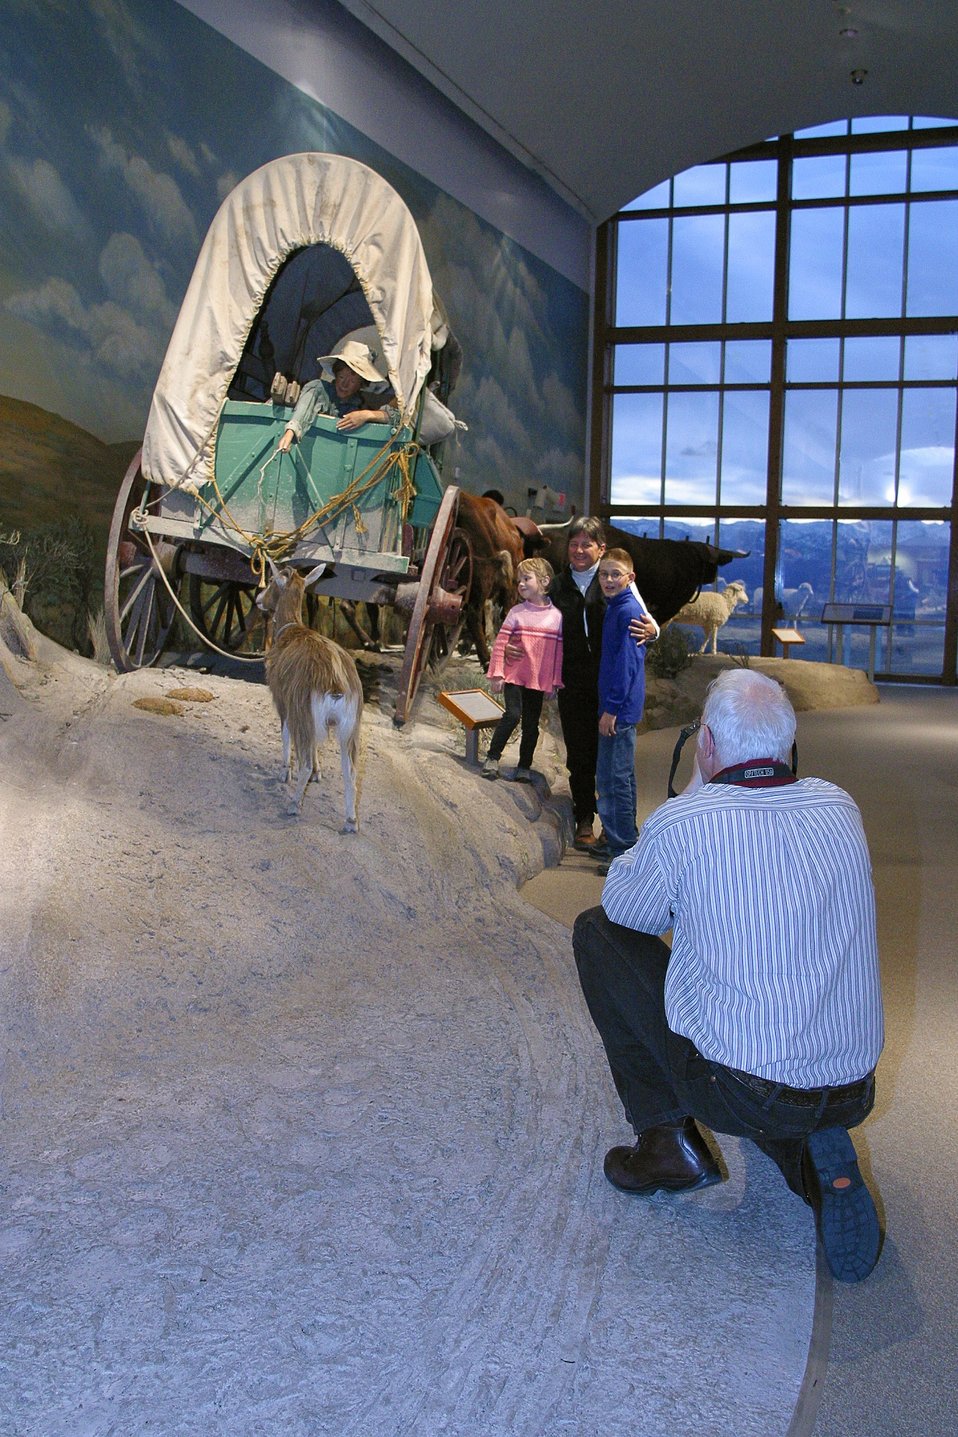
The main Gallery at the National Historic Oregon Trail Enterpretive Center depicts life size scenes along the Oregon Trail.